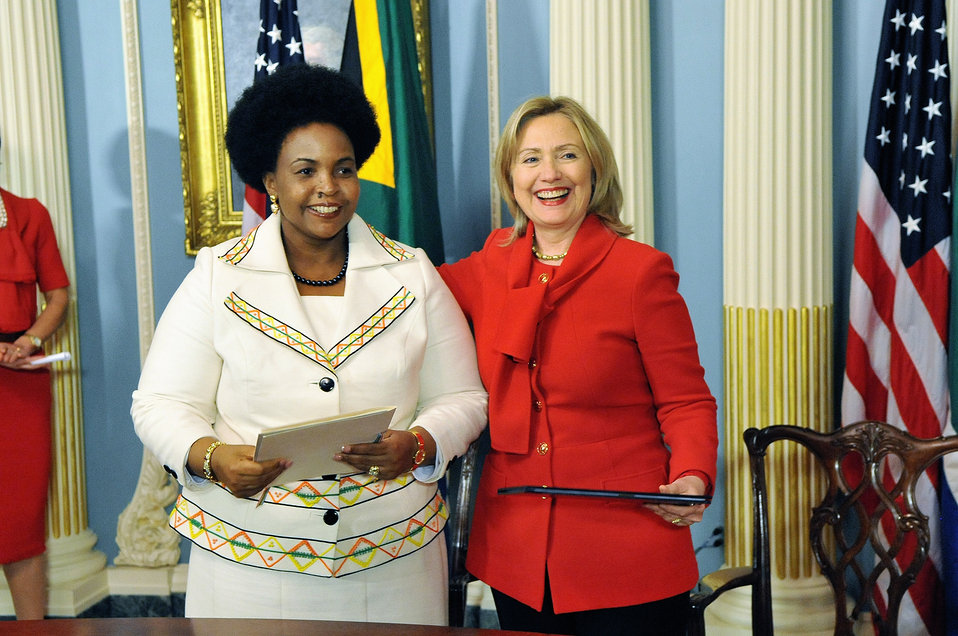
Secretary Clinton Smiles With South African Minister Maite Nkoana-Mashabane

U.S. Secretary of State Hillary Rodham Clinton smiles with South African Minister Maite Nkoana-Mashabane after signing the PEPFAR Partnership Framework Agreement with in the Treaty Room at the U.S. Department of State in Washington, D.C., on December 14, 2010.